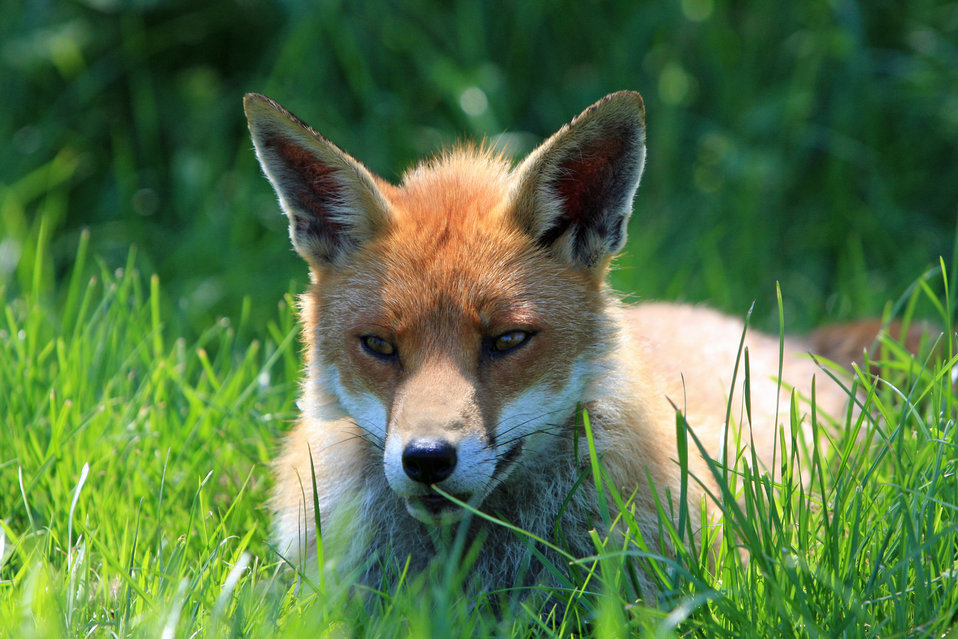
Fox resting portrait

Close-up portrait of a resting red fox face.